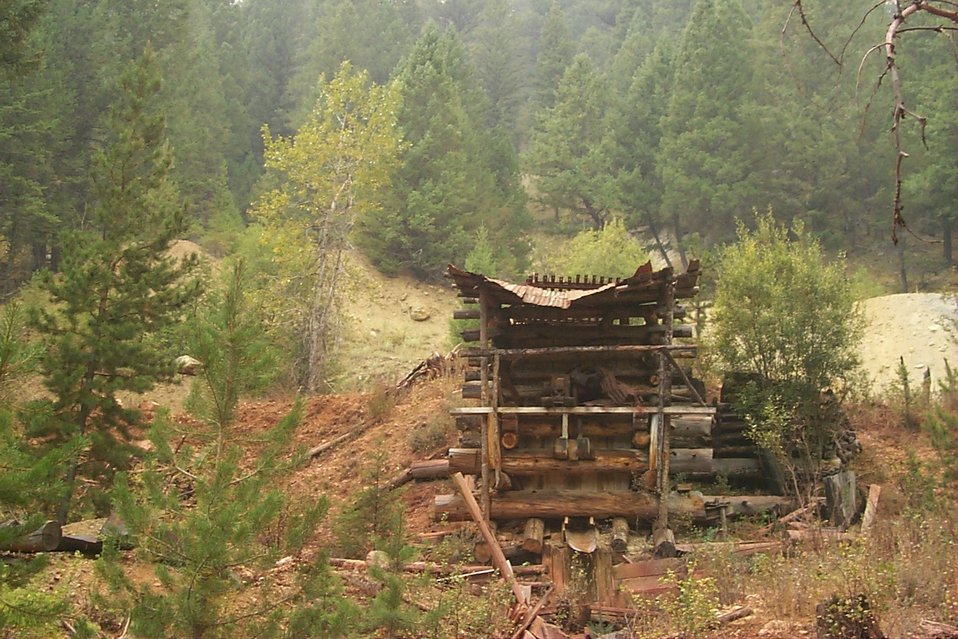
Urban interface Fire Clearwater Fire Salmon Field Office USRD Upper Snake River District